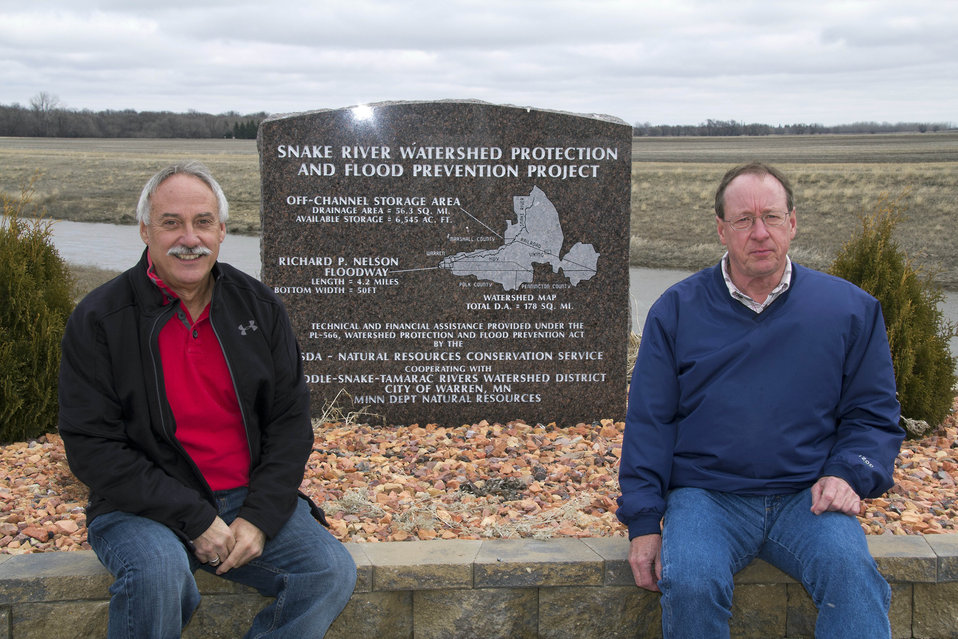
Doug Sorenson, Middle-Snake-Tamarac Rivers Watershed District board member, and Middle-Snake-Tamarac Rivers Watershed Administrator Nick Drees sit by the Richard P. Nelson Floodway monument. The Richard P. Nelson Floodway is a man-made four-mile channel that directs excess water around the town of Warren, MN and back to the Snake River. The floodway was designed as a flood control system by USDA’s Natural Resources Conservation Service.